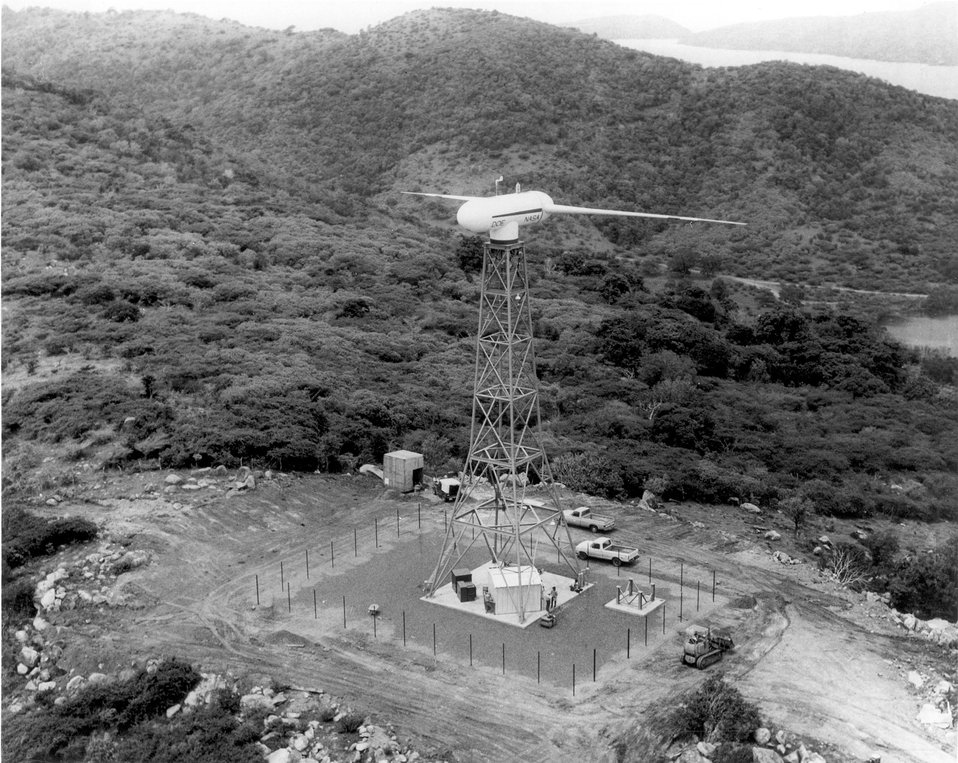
A large modern wind turbine generator is being field tested on Culebera Island, Puerto Rico for the Department of Energy and the National Aeronautics and Space Administration. c. 1978